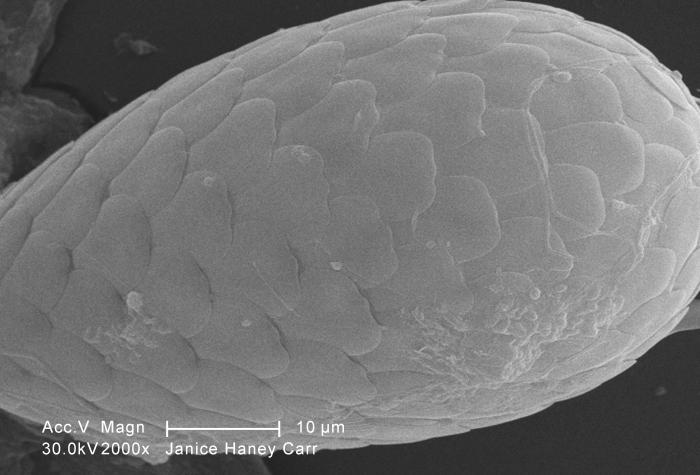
Under a moderate magnification of 2000X, this scanning electron micrograph (SEM) of an untreated water specimen extracted from a wild stream mainly used to control flooding during inclement weather, revealed the presence of unidentified organisms, which included bacteria, protozoa, and algae. In this particular view, a single copepod-like microorganism was seen occupying the field of view, which seemed to be encased in an outer shell of armour-like plates, or scales. See PHIL 11788 for a colorized view of this image.